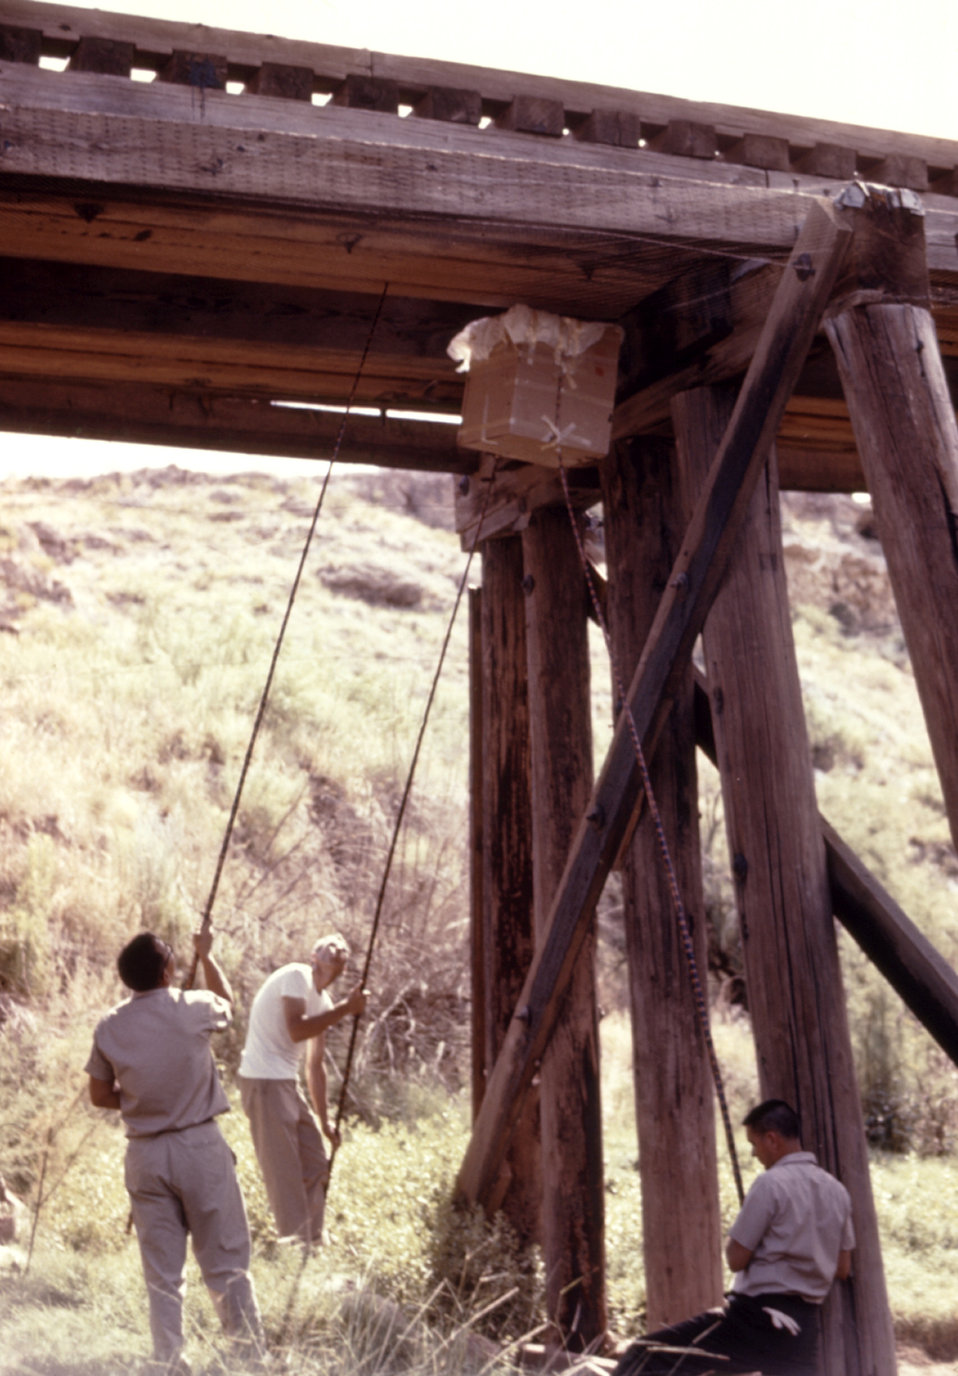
This photograph depicts a bat collection process underway beneath a railroad bridge during a 1974 arbovirus study.